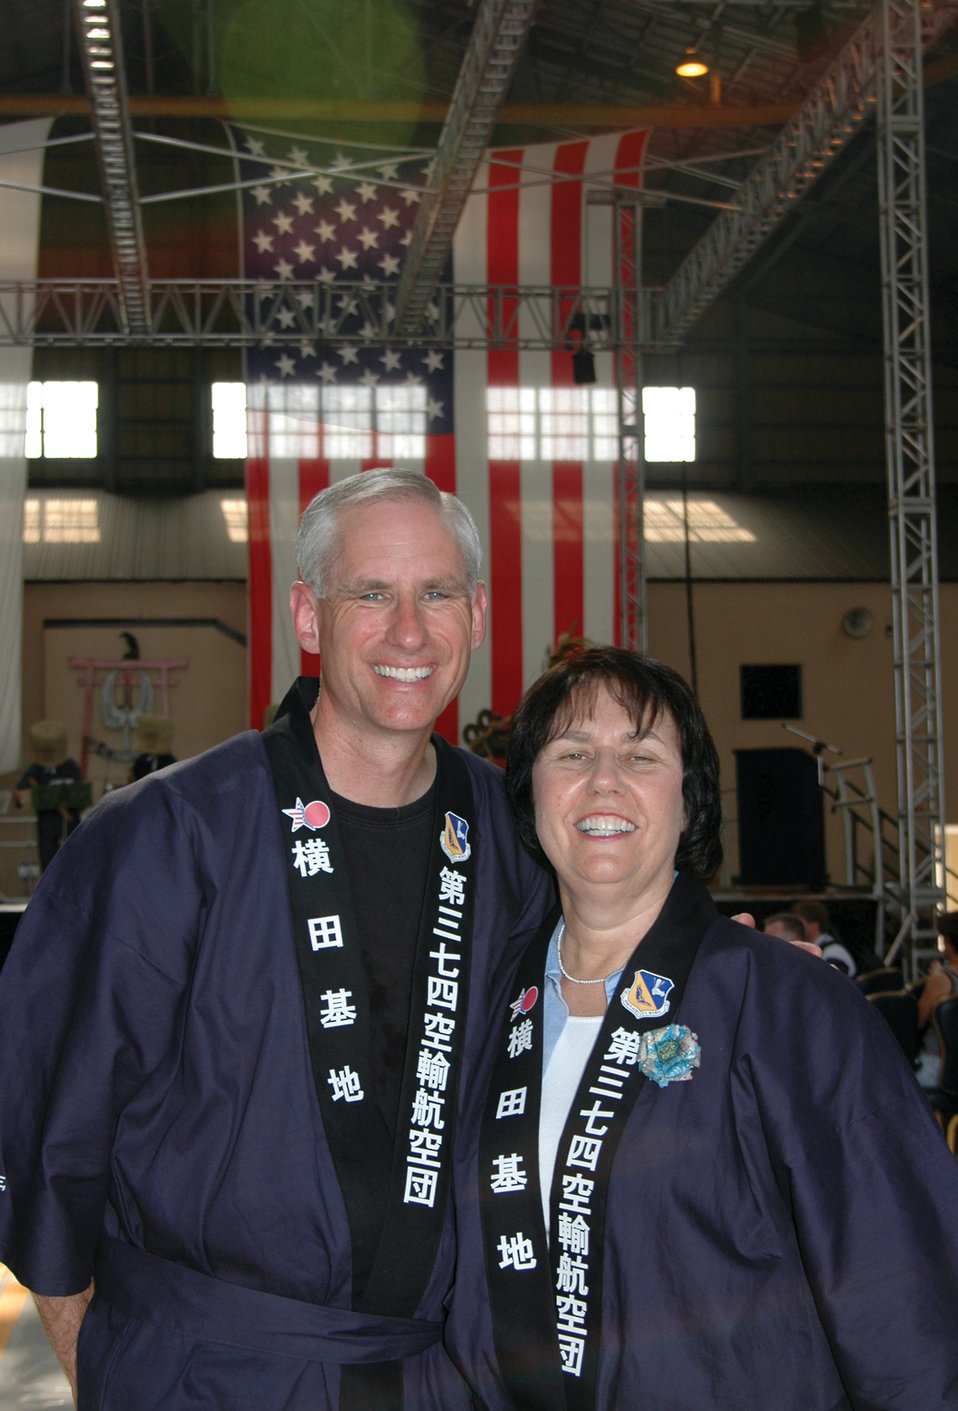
Yokota couple wins O'Malley award

YOKOTA AIR BASE, Japan -- Col. Mark Schissler and his wife, Marcia, ware the recipients of the 2004 General and Mrs. Jerome F. O'Malley Award. Colonel Schissler is the former 374th Airlift Wing commander here.